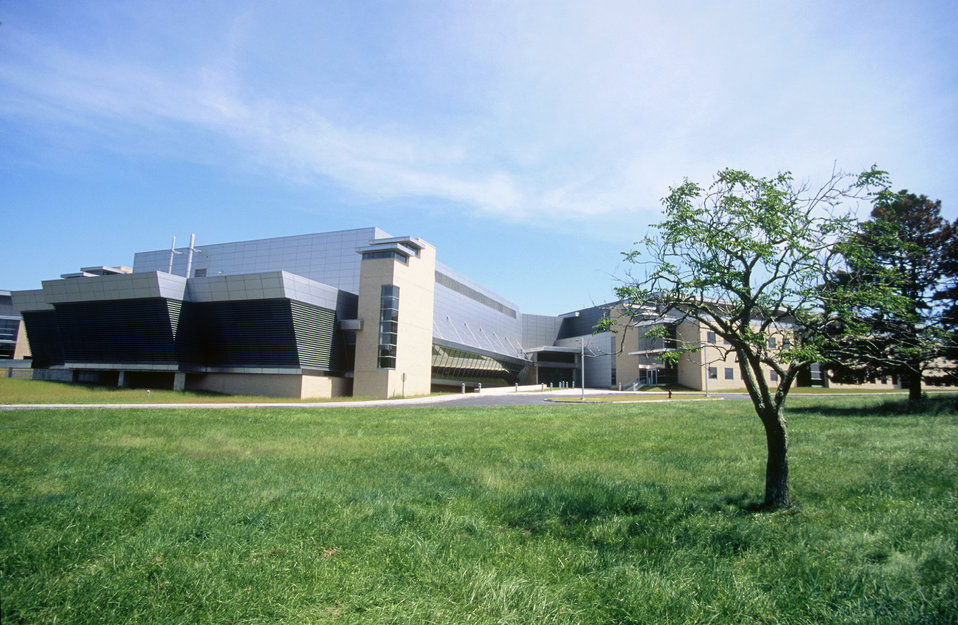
Advanced Measurement Laboratory

NIST's new Advanced Measurement Laboratory is the most technically advanced research facility of its kind in the world. The $235 million, 49,843 square meter (536,507 square foot) facility features five separate wings with stringent environmental controls on air quality, temperature, vibration, and humidity. The facility was dedicated in June 2004.